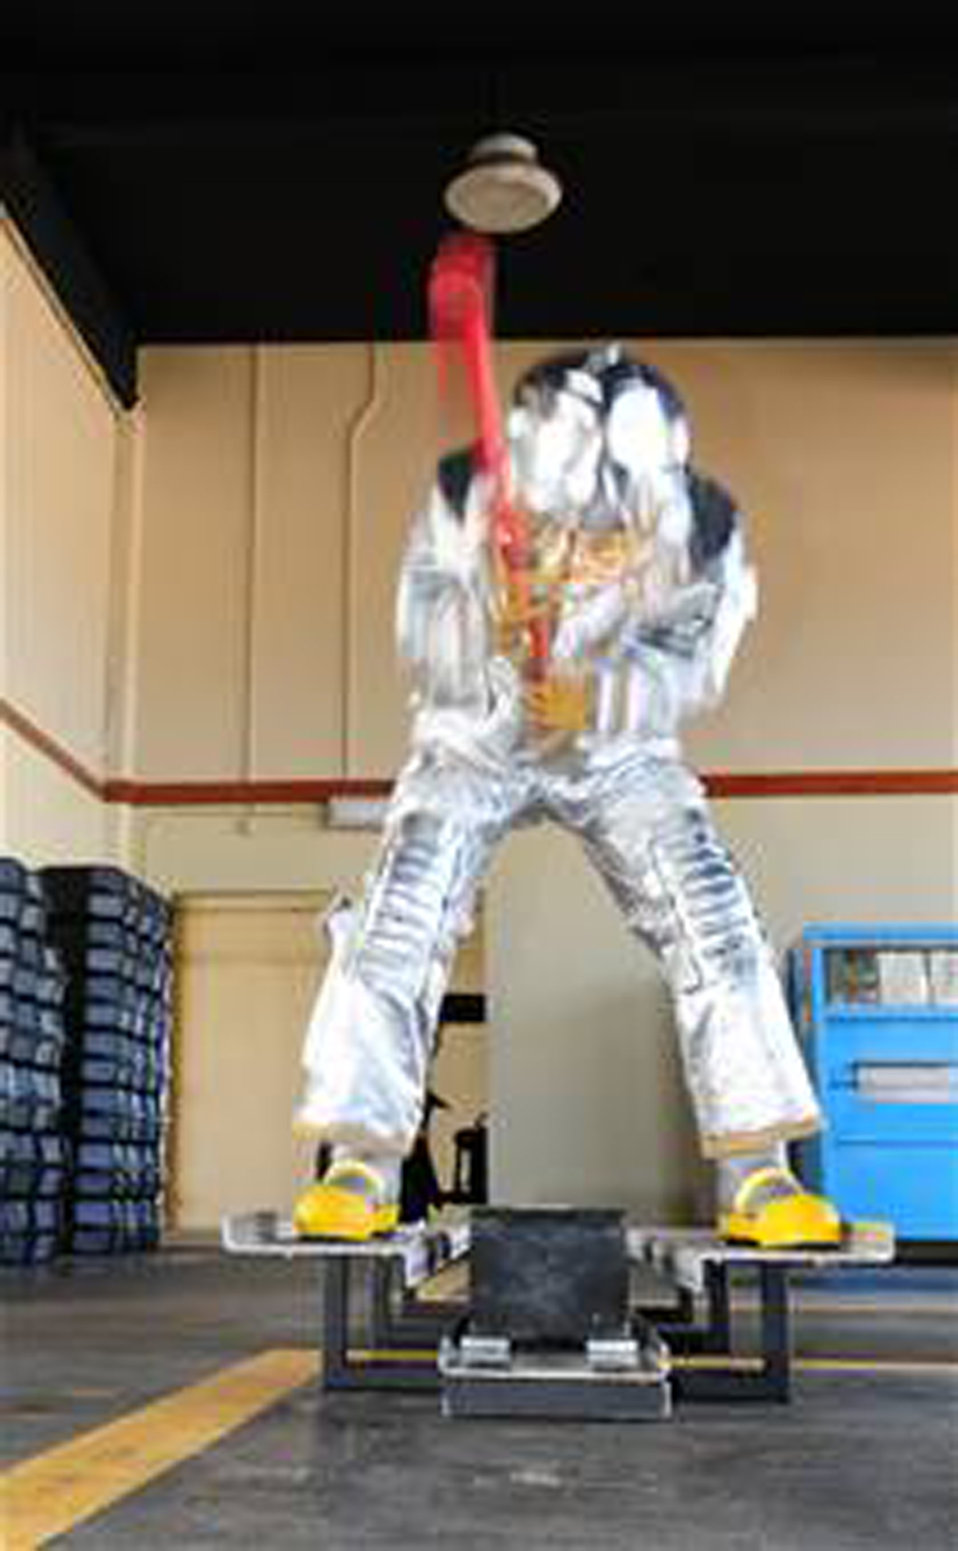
Academy cadets experience operational Air Force

A U.S. Air Force Academy cadet swings a sledgehammer to move the weight on a Keiser sled during a fire fighter physical training competition May 19 at Andersen Air Force Base, Guam. The fire house offered a unique perspective for the third-year cadets. The cadets observed enlisted personnel in action in leadership positions.